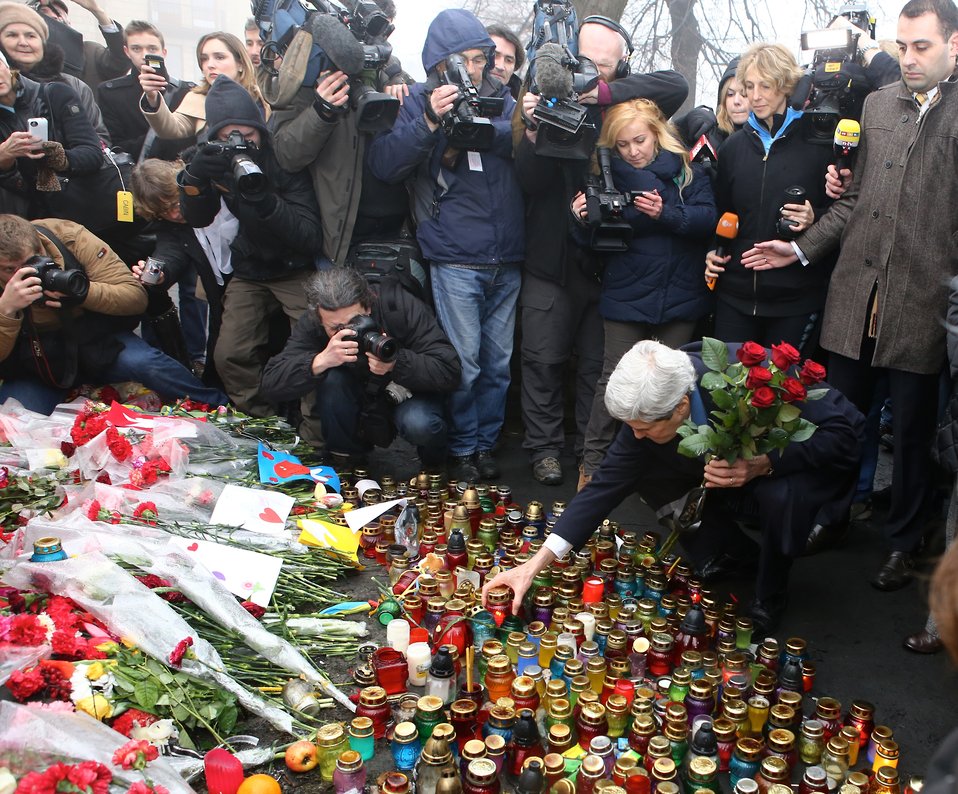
Secretary Kerry Places Roses Atop the Shrine of the Fallen in Kyiv

U.S. Secretary of State John Kerry places roses atop the Shrine of the Fallen in Kyiv, Ukraine, on March 4, 2014.